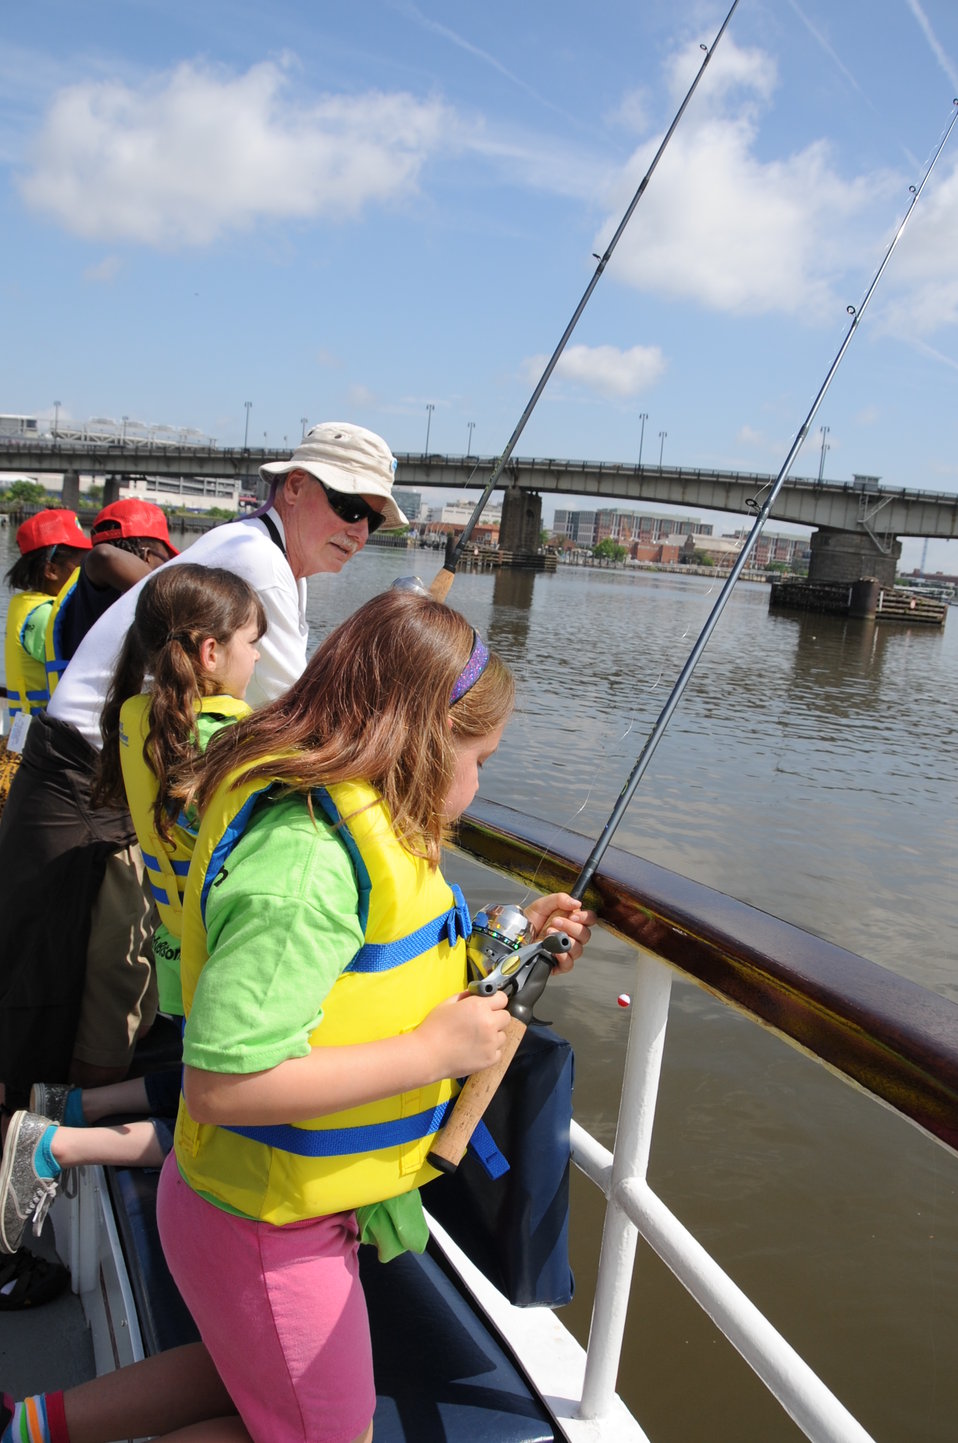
2013 National Fishing and Boating Week

Local students prepare to enjoy fishing at the annual kick-off of National Fishing and Boating Week on the Anacostia River in Washington D.C.